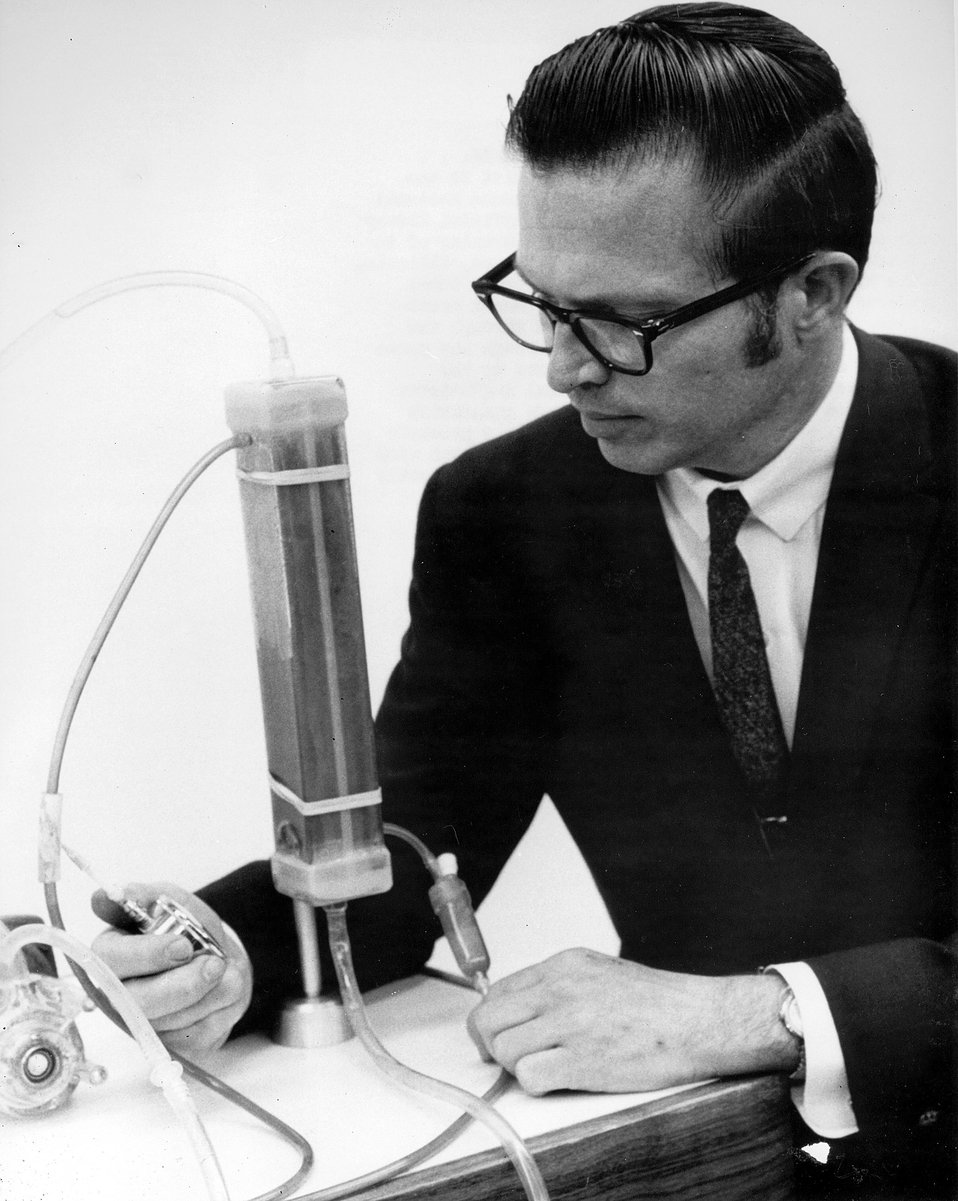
Finley W. Markley, Associate Physicist in High Energy Facilities Division at Argonne inspects of a model of an artificial kidney he developed with Dr. A.R. Lavender of the Veteran's Administration Hospital at Hines, IL.
c.1970.